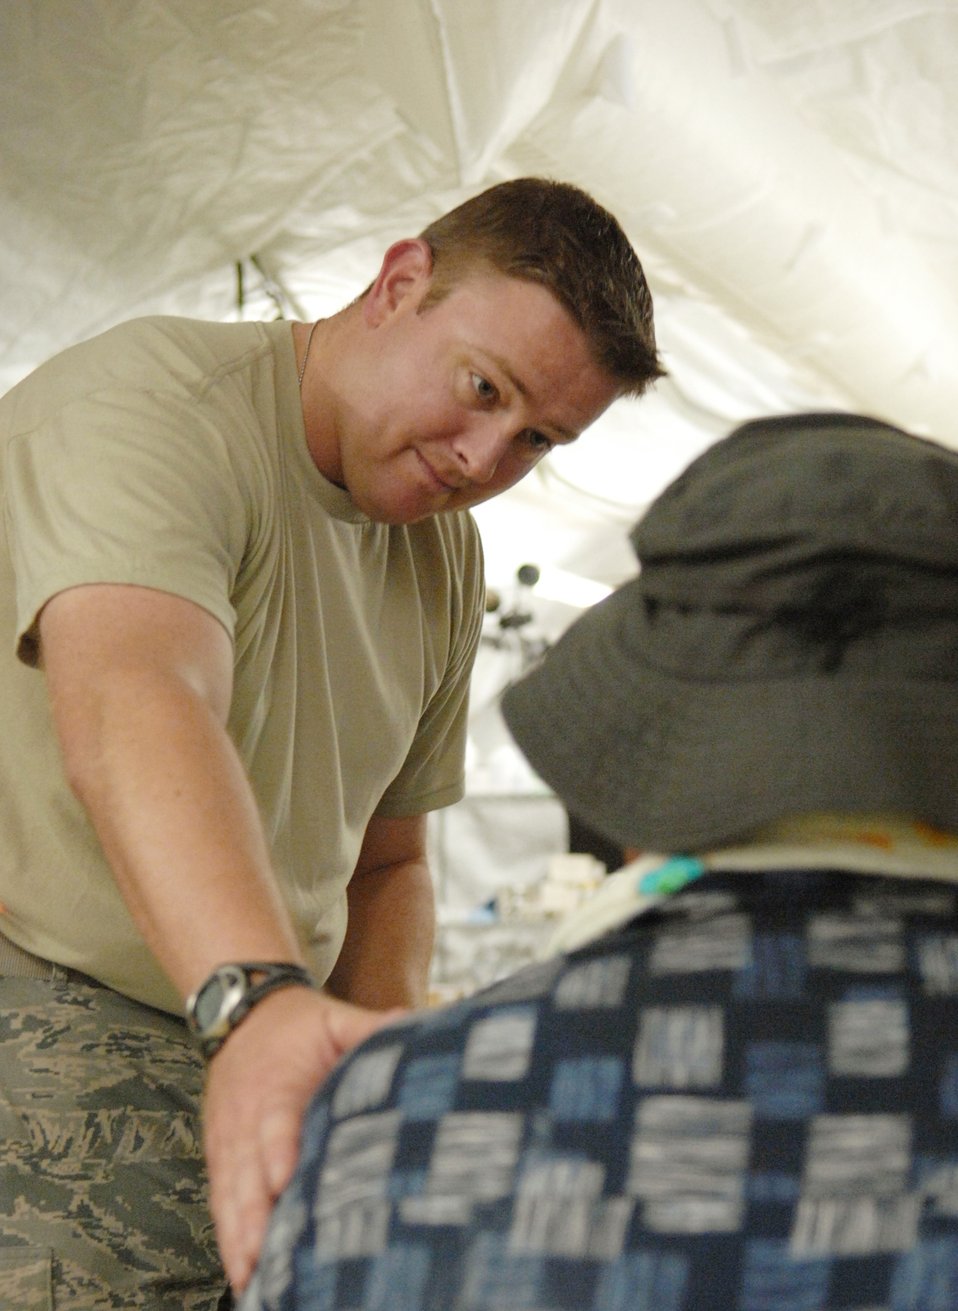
Air Force physician applies research to humanitarian exercise

Capt. (Dr.) Christopher Lindshield speaks to a patient during the humanitarian assistance rapid response team validation exercise Sept. 4, 2009, on Chuuk, in the Federated States of Micronesia. The team is the Air Force's new expeditionary medical capability designed to deploy within 24-hours of notice during disaster relief operations. The team provides basic medical care and public health assistance to 350 to 500 patients per day and is based at Andersen Air Force Base, Guam. Doctor Lindshield is from the 374th Medical Group at Yokota Air Base, Japan.